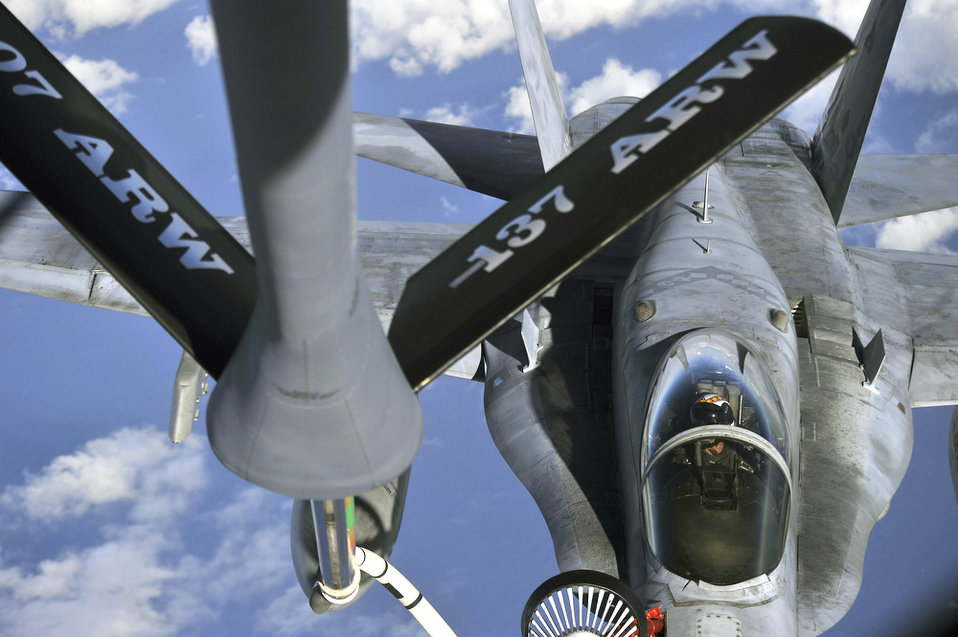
Refuelers keep aircraft flying during exercise

A U.S. Navy F/A-18F Super Hornet flying over Hawaiian air space July 20, 2010, receives fuel from a KC-135 Stratotanker from the 507th Air Refueling Wing at Tinker Air Force Base, Okla., during the Rim of the Pacific Exercise. RIMPAC, the world's largest maritime exercise, is a biennial event which stresses interoperability among the 14 nations participating in the exercise. The tanker is staging out of Joint Base Pearl Harbor-Hickam, Hawaii.